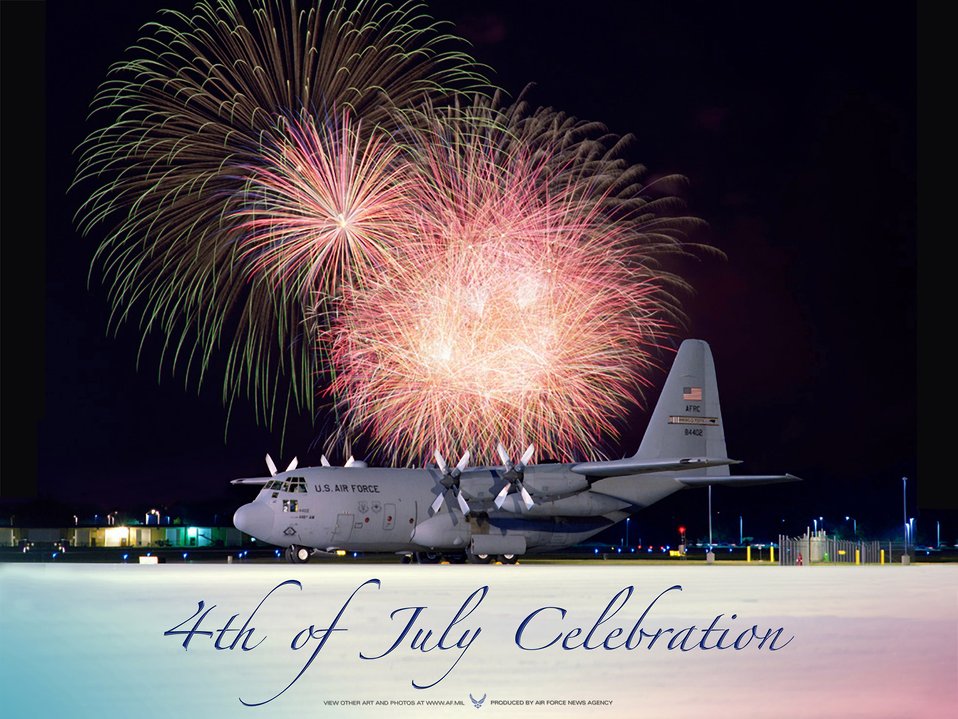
A festive occasion

Bursts of fireworks shower a flightline in this poster created by Virginia Reyes of the Air Force News Agency with U.S. Air Force photo by Joe Oliva. Requests for a PDF of this 4th of July celebration poster for local printing can be made to art@afnews.af.mil.